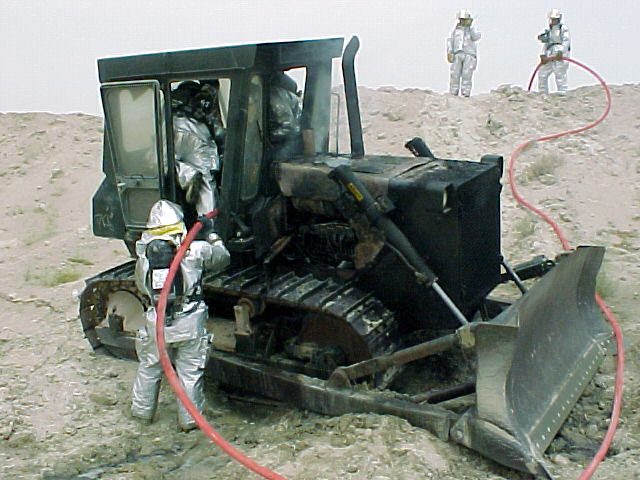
Firefighters respond to blaze

SOUTHWEST ASIA -- Firefighters with the 386th Expeditionary Civil Engineer Squadron extinguish a bulldozer fire near the flightline at a forward-deployed location. The cause of the fire is under investigation.